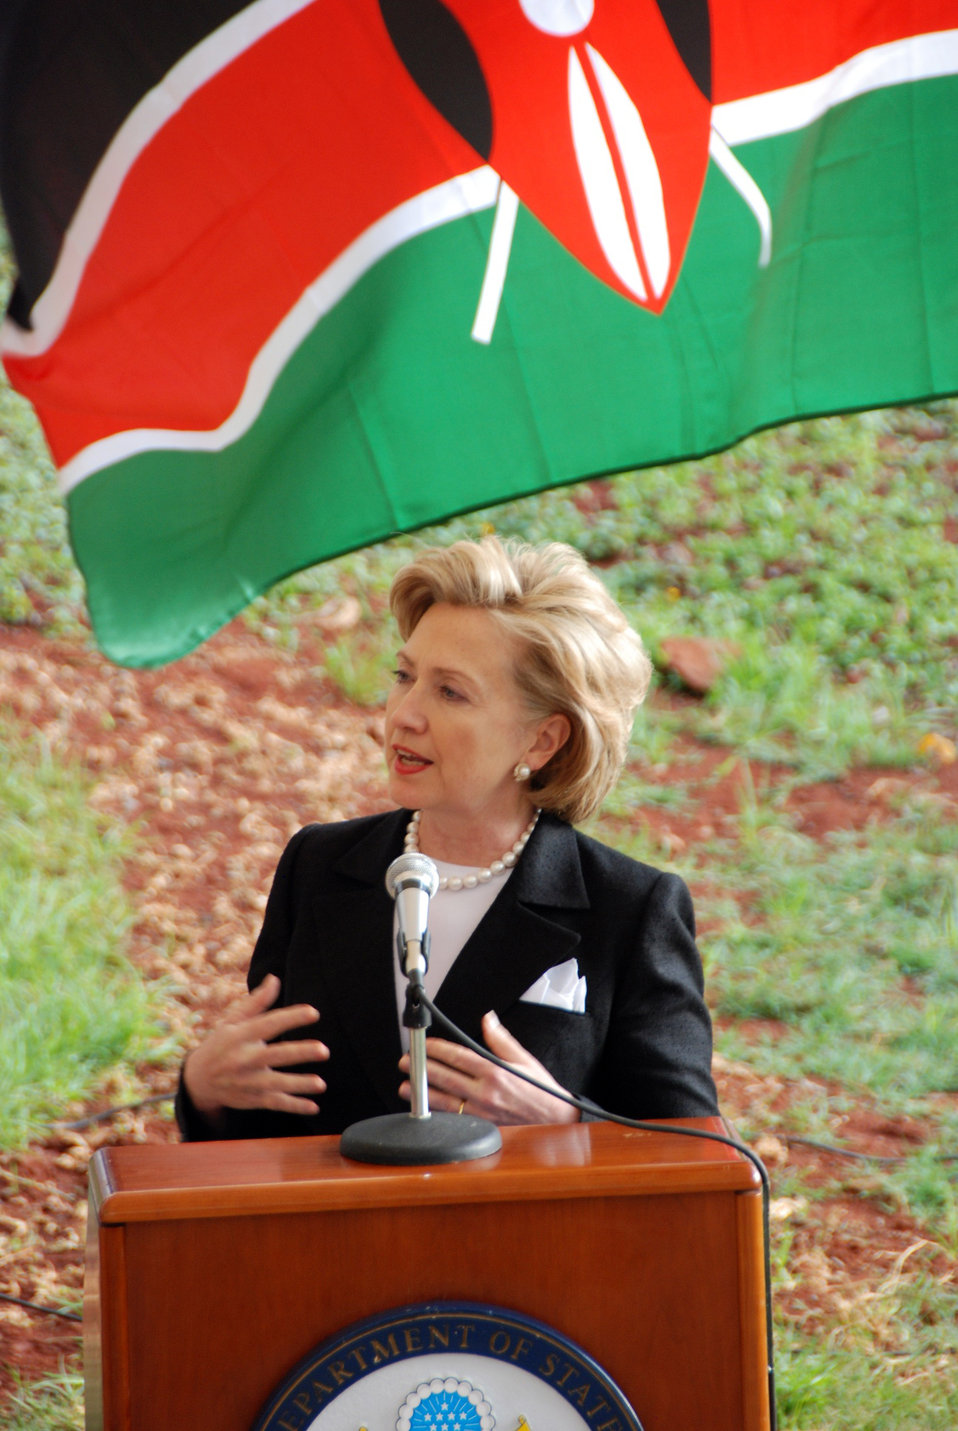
Secretary Clinton Addresses U.S. Embassy Staff in Kenya

U.S. Secretary of State Hillary Rodham Clinton addresses U.S. Embassy employees in Nairobi, Kenya August 6, 2009.